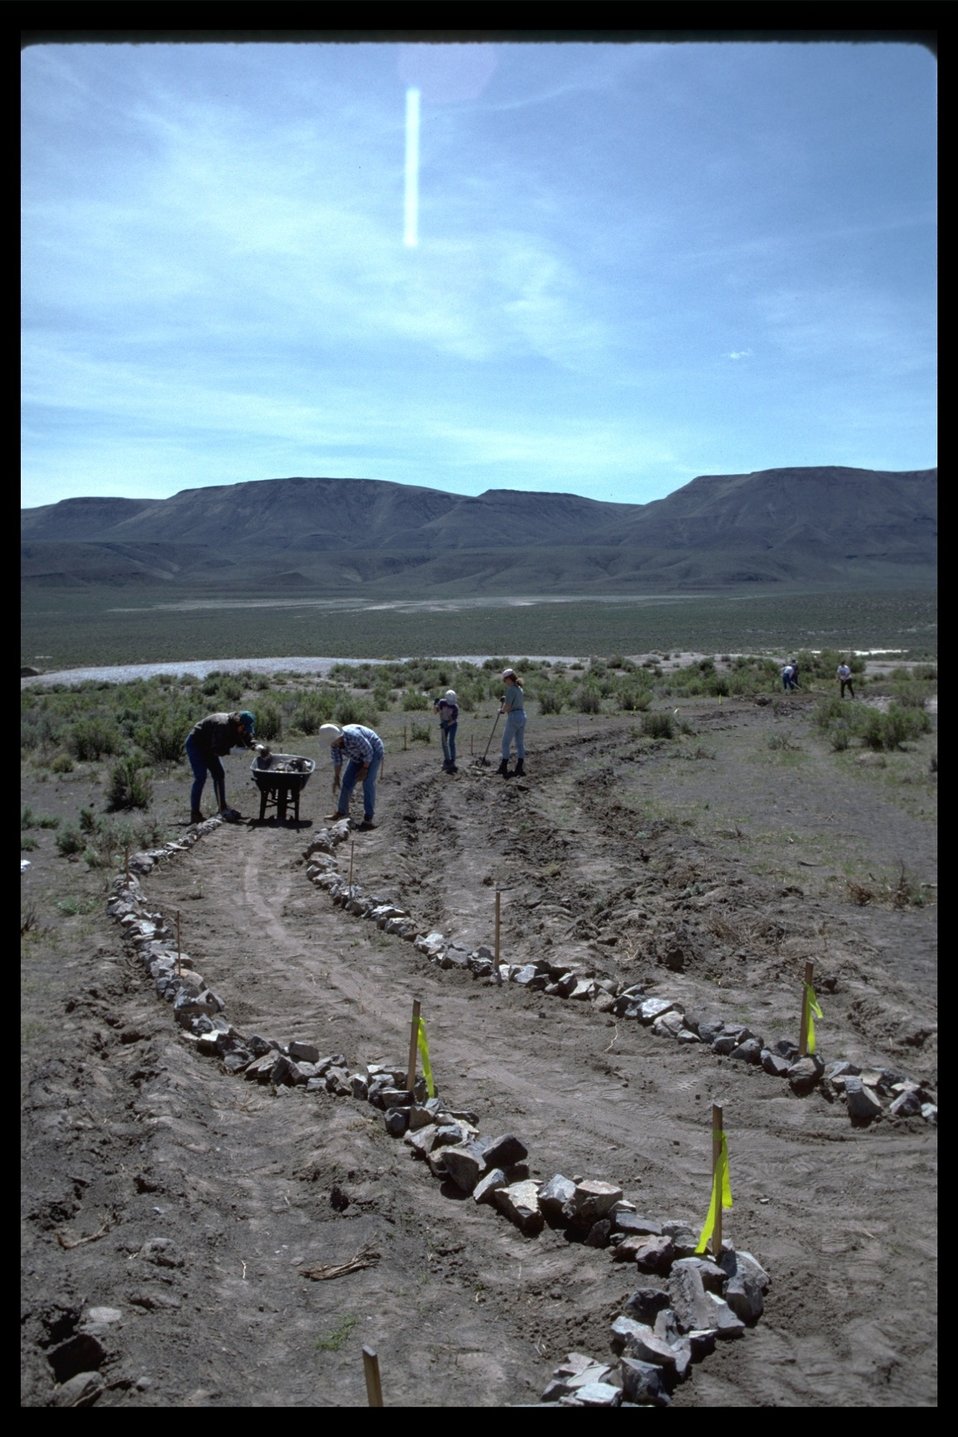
East Alvord WSA, Mickey Hot Springs volunteer project. (WSA 2-73A)